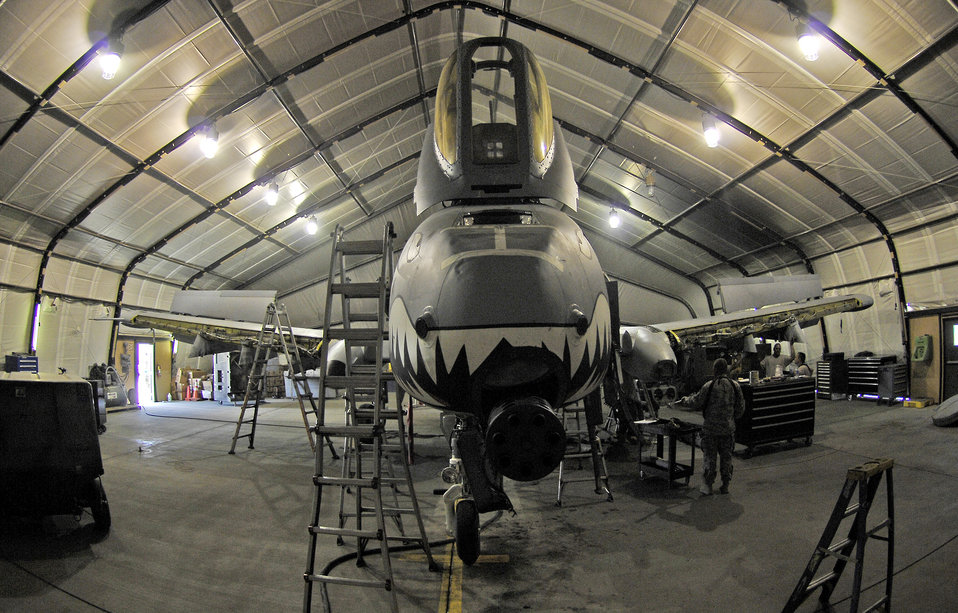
Waiting to prowl

An A-10 Thunderbolt II sits in the 455th Expeditionary Maintenance Squadron hangar for a phase inspection July 2 at Bagram Airfield, Afghanistan. Maintainers here implemented a new phase inspection process that cuts maintenance time on the aircraft in half.